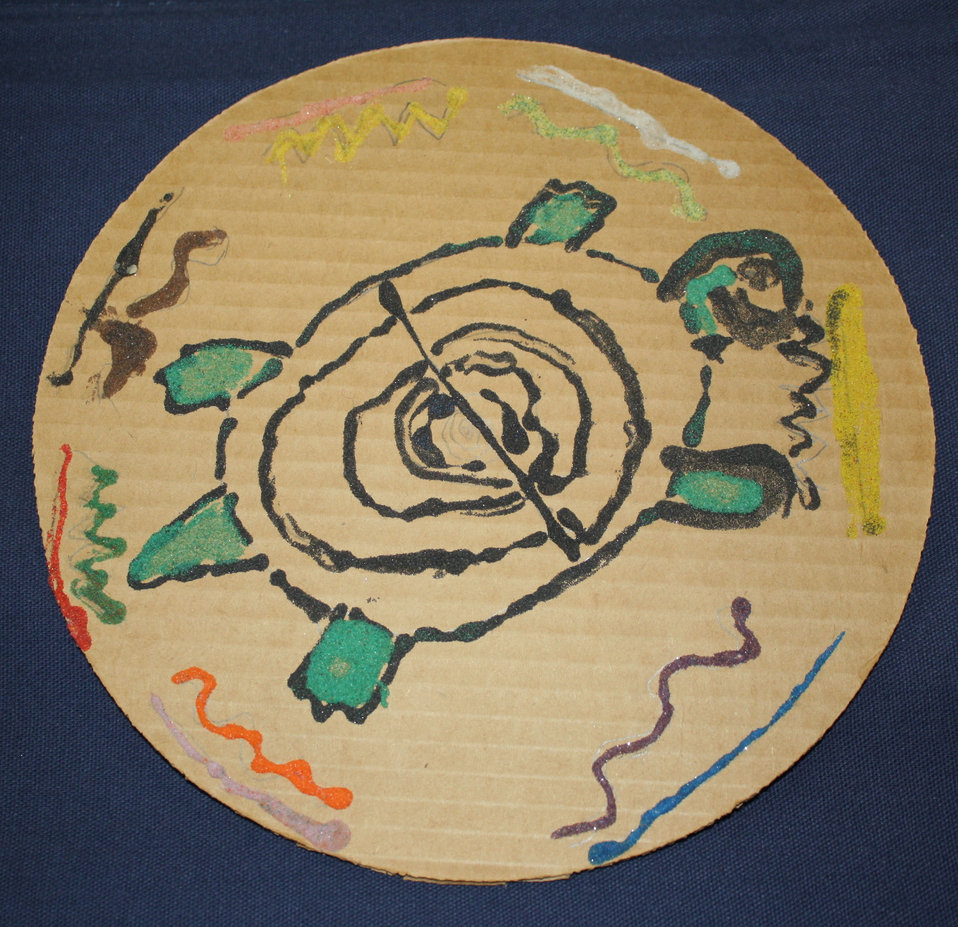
Student Artwork

Second-grader Koy Monette of Belchertown, Mass., donated this artwork in honor of Year of the Turtle! He made the piece using cardboard, paint, glue and sand. Thanks, Koy!